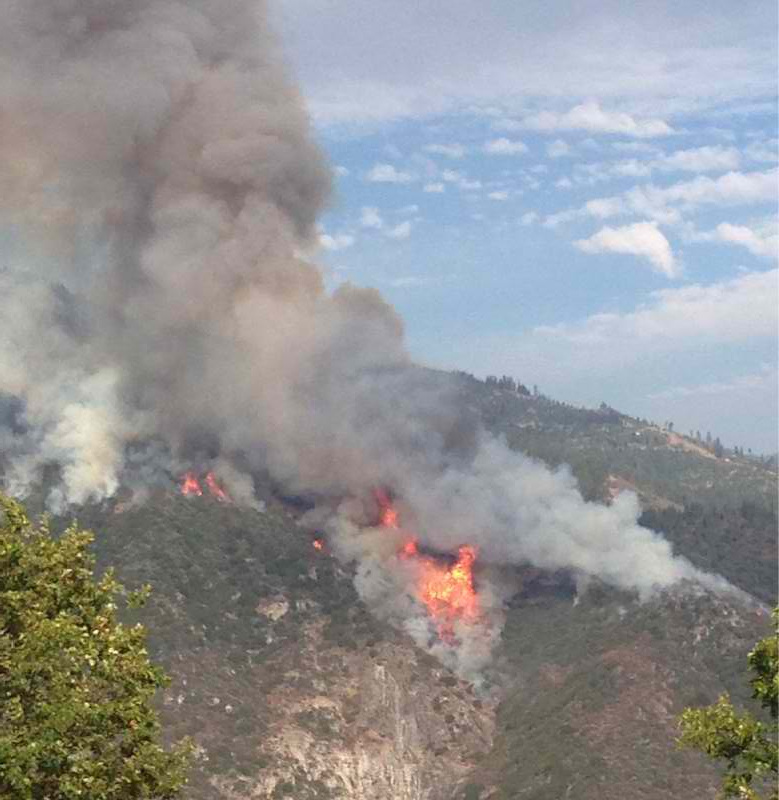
The Aspen Fire burns at night from Mile High Curve. The Aspen Fire in the Sierra National Forest near Big Creek, CA began on Jul. 22, 2013 by lightning and has consumed approximately 20,797 acres and is approximately 75% contained.